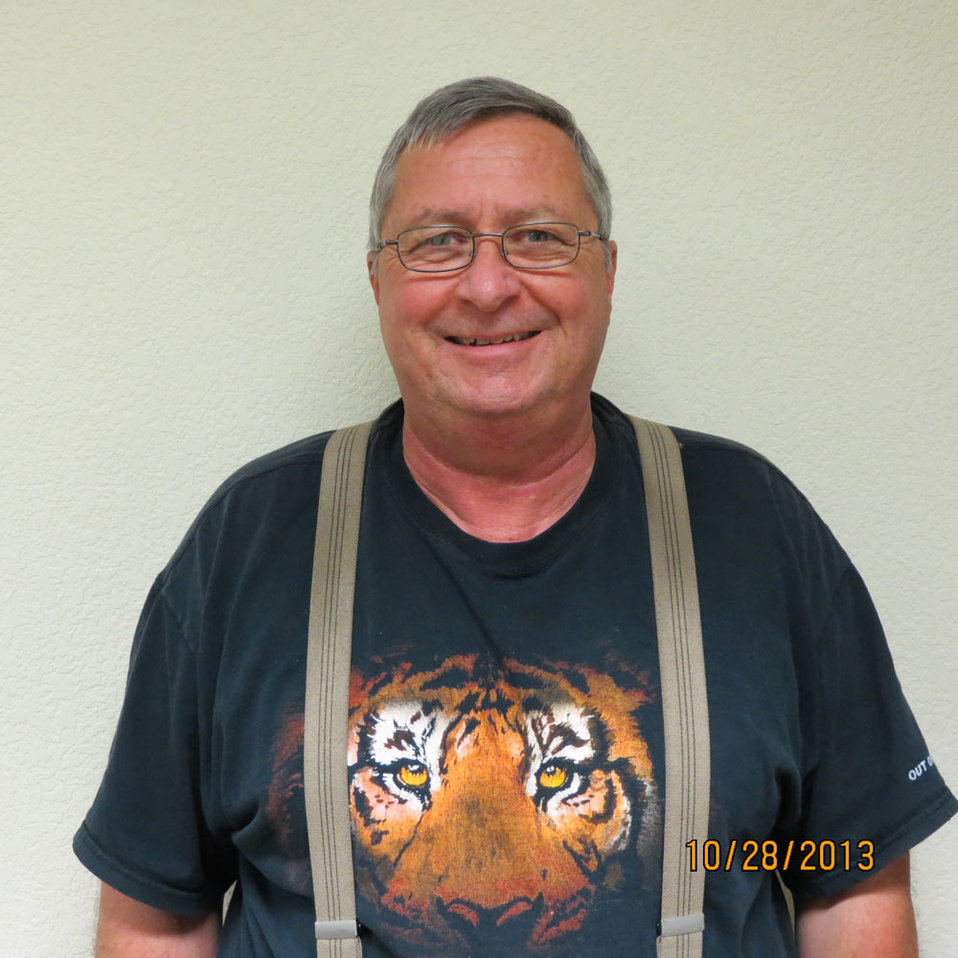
Ken McGowan--Southwest Region

Ken McGowan is an Administrative Assistant in the Tucson Ecological Services Suboffice. He served 24 years (1969-1993) in the Air Force.